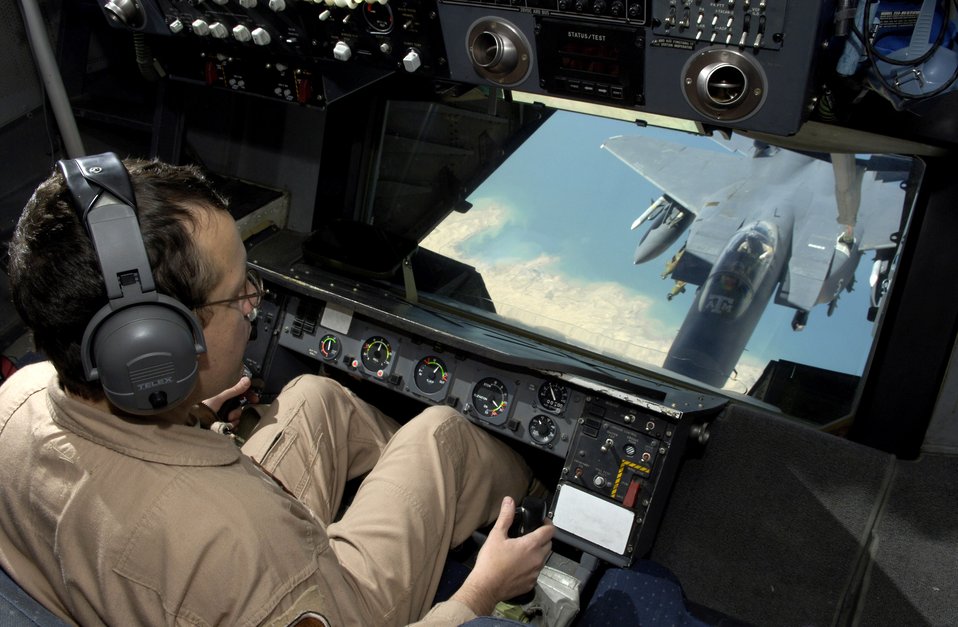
On a mission

Master Sgt. Todd McPeak refuels an F-15E Strike Eagle during an Operation Iraqi Freedom mission on July 18. Sergeant McPeak is a KC-10 Extender boom operator with the 908th Expeditionary Air Refueling Squadron.